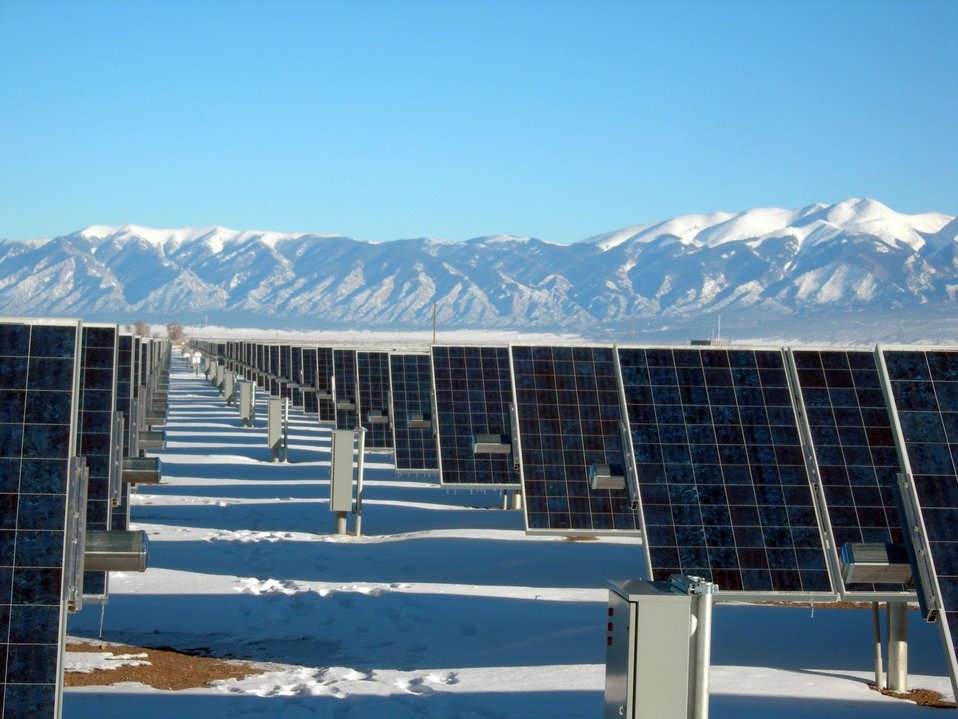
A VIEW OF ONE-AXIS TRACKING PHOTOVOLTAIC PANELS AT THE SUNEDISON PHOTOVOLTAIC POWER PLANT NEAR ALAMOSA, COLORADO.

An 82-acre tract in south central Colorado, near the New Mexico border, is the site for one of the largest photovoltaic power plants in the United States. The Alamosa Photovoltaic Plant, which went on-line in December 2007, and generates about 8.2 megawatts of power using Suntech solar modules. SunEdison built, owns and will maintain the Alamosa plant and Xcel Energy will purchase the power generated by the plant. NREL rates the San Luis Valley, where the plant is located, as having the best available resource for solar power conditions in Colorado.